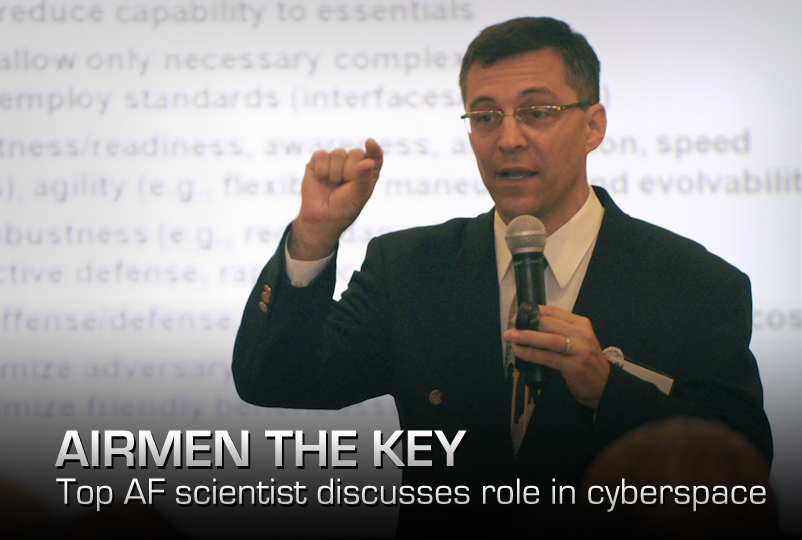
Airman the Key